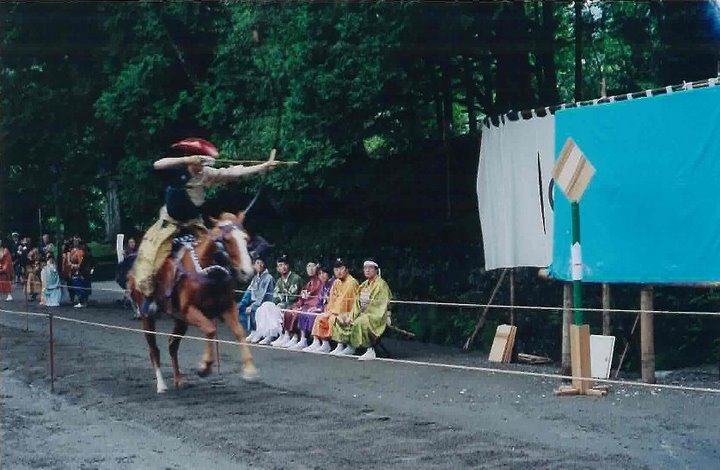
From the 1000 Samurai Festival in Nikko in May